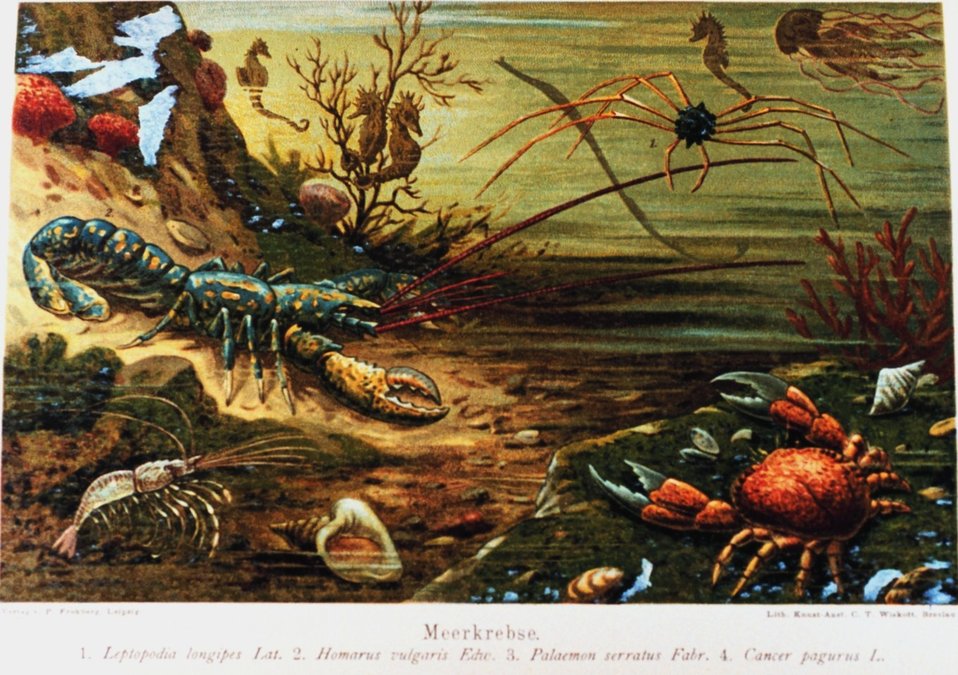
'Meerkrebse' in: 'Das Meer' by M. J. Schleiden, 1804-1881. P. 464. Library Call Number QH91.S23 1888.